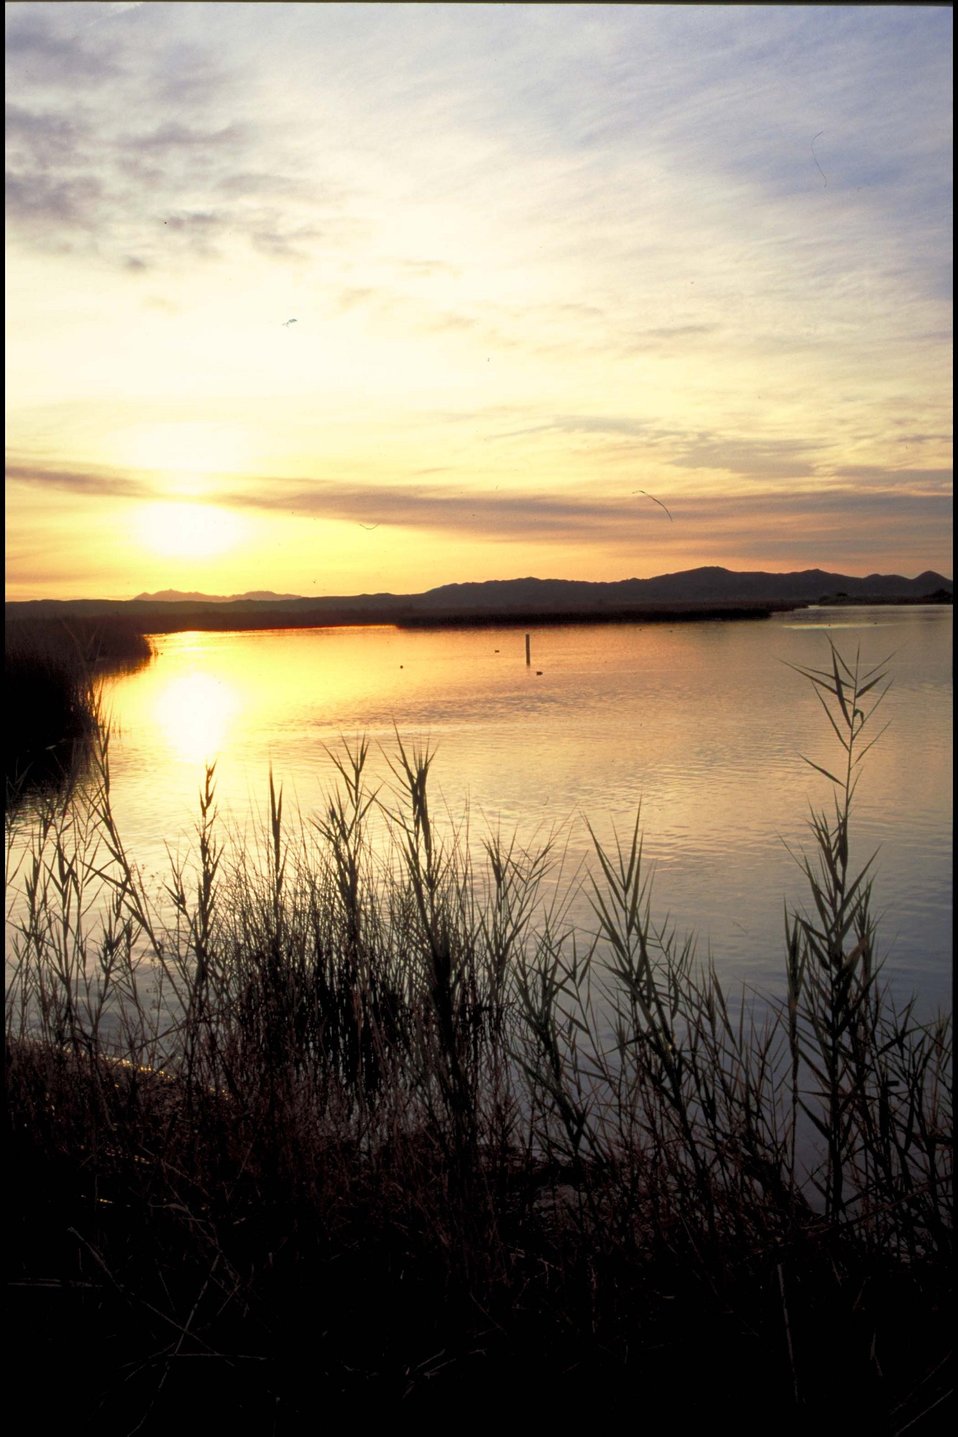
Peaceful sunrise at Mittry Lake